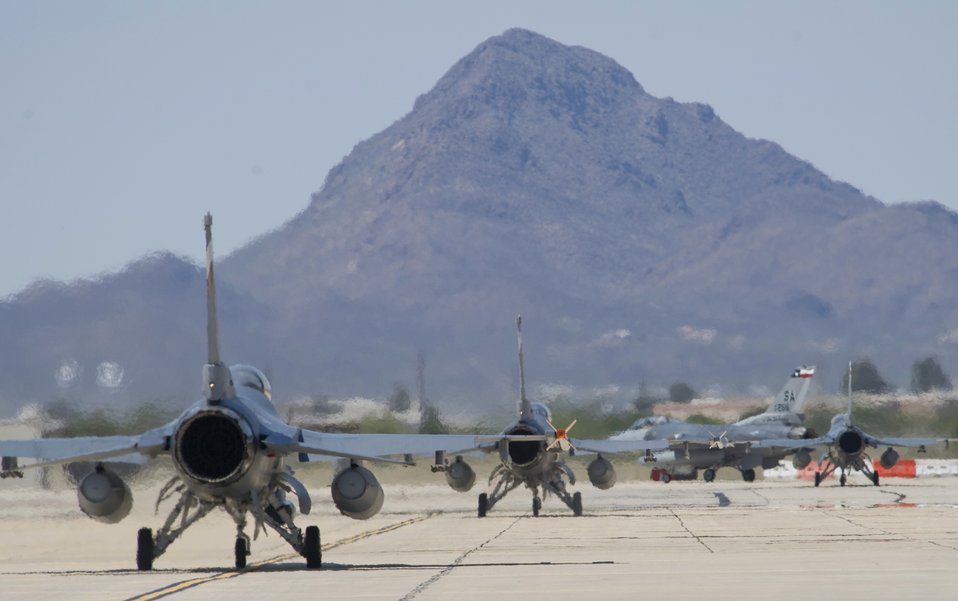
Airmen train next generation

F-16 Fighting Falcons assigned to the 149th Fighter Wing from San Antonio depart for training sorties during Exercise Coronet Cactus April 24 at Davis-Monthan Air Force Base, Ariz. The 149th Fighter Wing is a Texas Air National Guard unit and trains active duty F-16 Fighting Falcon pilots.